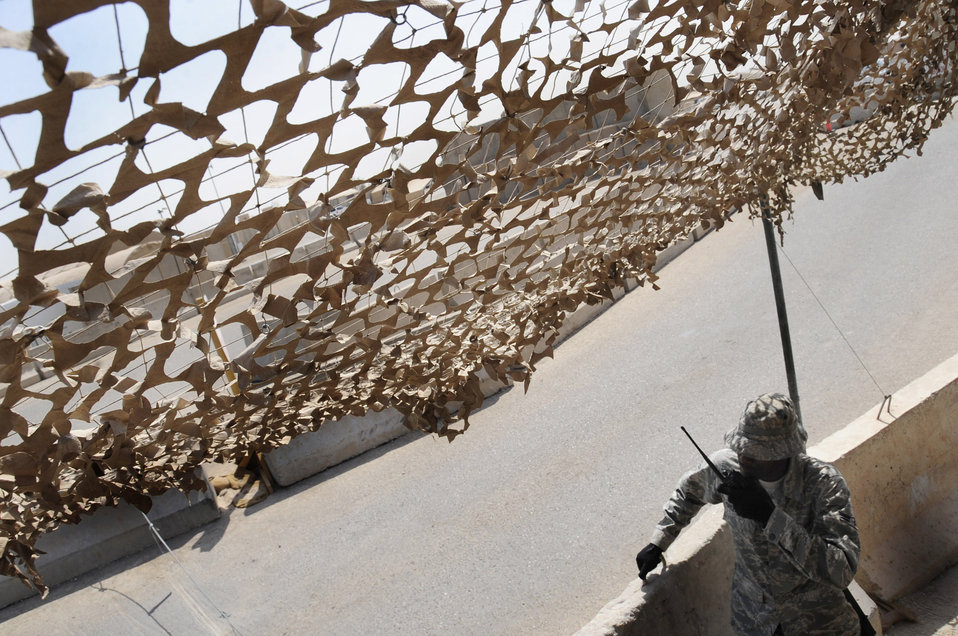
Laying Down the Force at Ali

Airman 1st Class Levante Greenwood stands post at an entry control point at an Air Force living area here July 24. Airmen in the Force Protection Section are tasked with maintaining the installation's internal safety of the base. In addition to their attendant duties, FP escorts compliment security forces in securing coalition assets and personnel while enabling the group's mission. Airman Greenwood is deployed from Hurlburt Field Air Force Base, Fla., and is assigned to the 407th Expeditionary Security Forces Squadron.